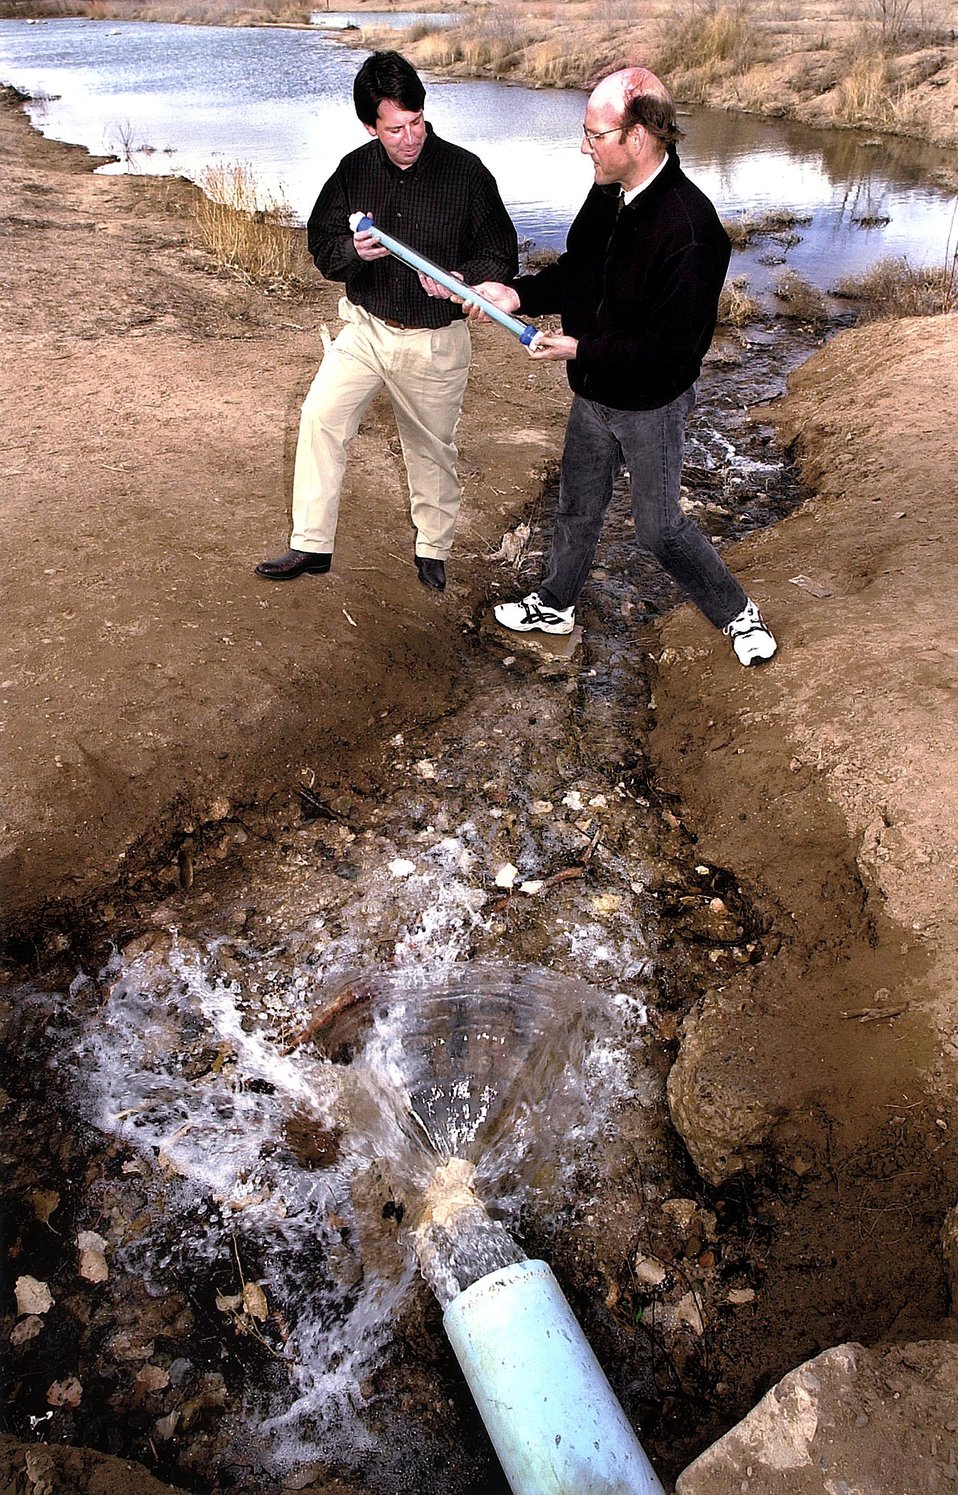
Sandia researchers holding column of arsenic trapping material called specific anion nanoengineered sorbents (SANS).

Pictured are members of a Sandia research team that developed arsenic trapping materials they call specific anion nanoengineered sorbents. Ground water flowing through a column of the sans has its arsenic content reduced to undetectable levels. The sans selectively attract dissolved anions such as arsenate (A toxic arsenic-containing compound) To positively charged sites on the sans surfaces and grab hold.